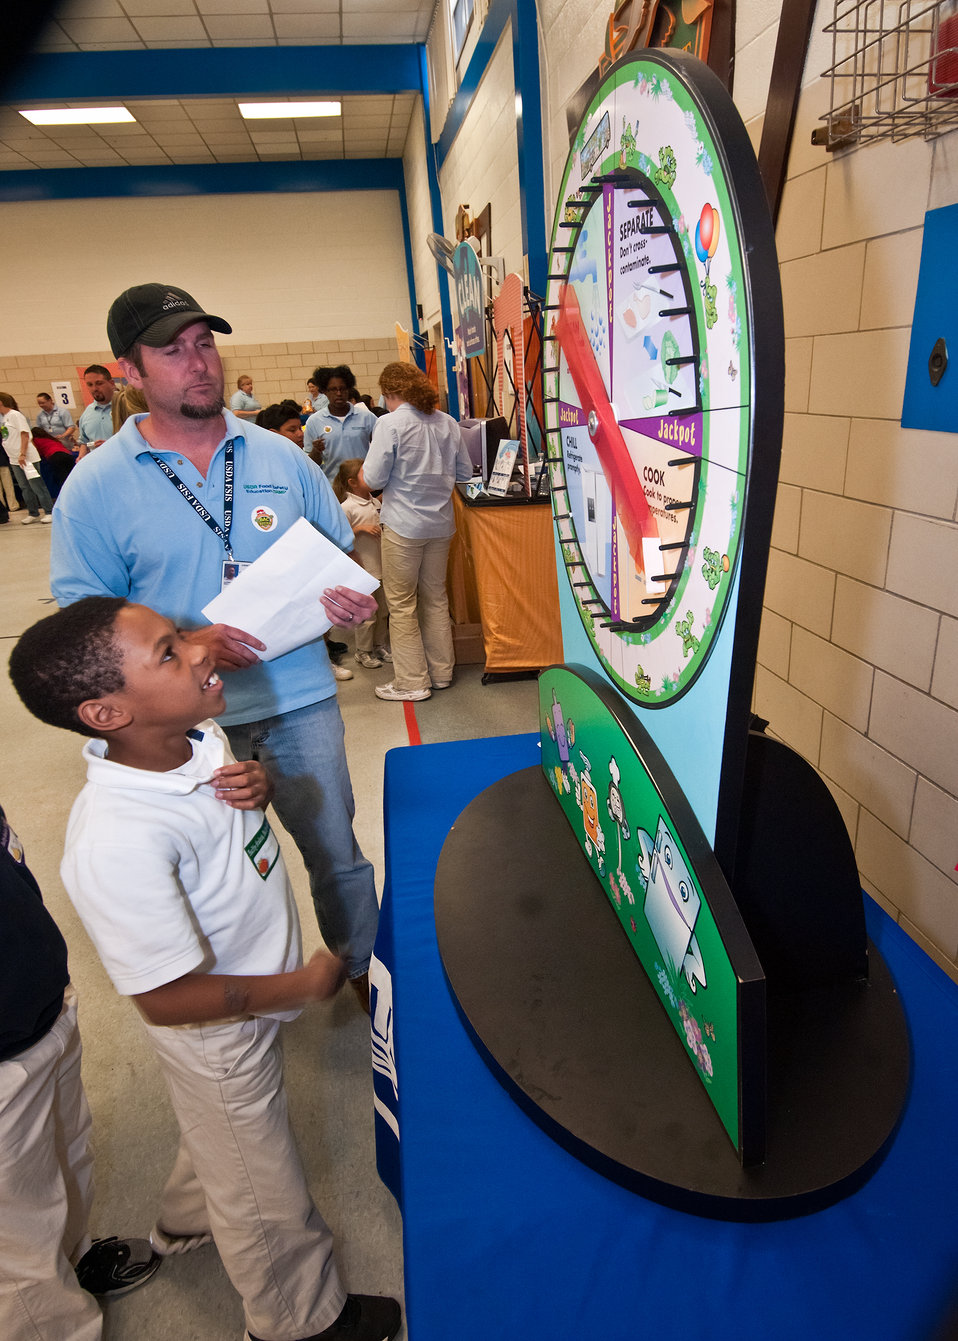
Brandon waits for the spinner to stop on the “Fight Bac Game” as Eric Sammons, Food Safety Inspection Service waits to ask Randy a food safety question. Sammons was volunteering with the United States Department of Agriculture Food Safety Inspection Service, Food Safety Education Camp. FSIS visited Maryland City Elementary School in Laurel, MD, on Thursday, May 5, 2011. The key words in food preparation are, Cook, Clean, Separate and Chill. The FSIS Food Safety Education Camp visits schools to teach safe food handling.